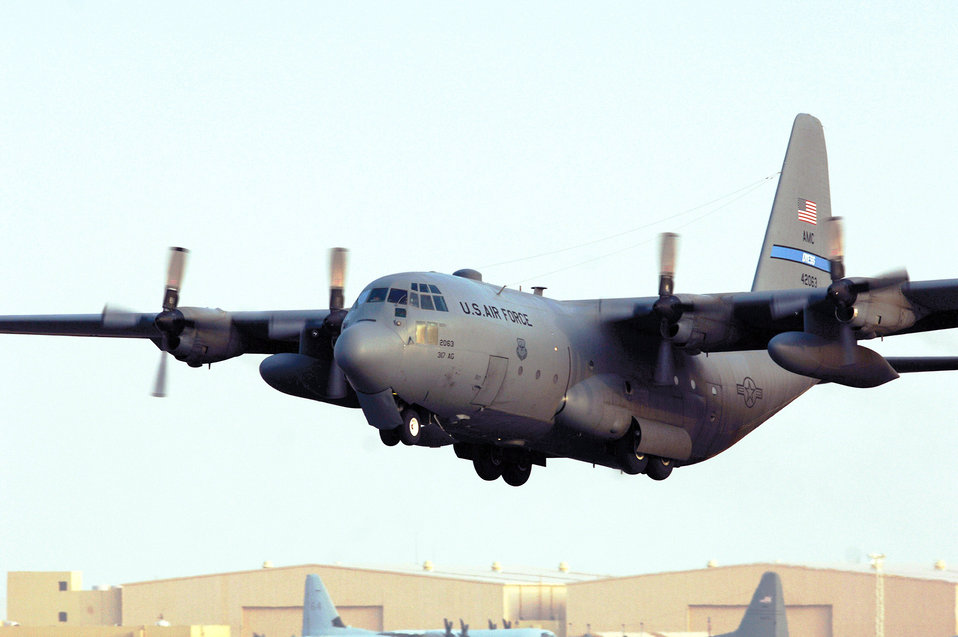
Airpower summary for July 1, 2007

An Air Force C-130 Hercules takes off for an airlift mission from a base in Southwest Asia. More than 150 airlift sorties were flown by coalition aircraft July 1 throughout the area of responsibility.